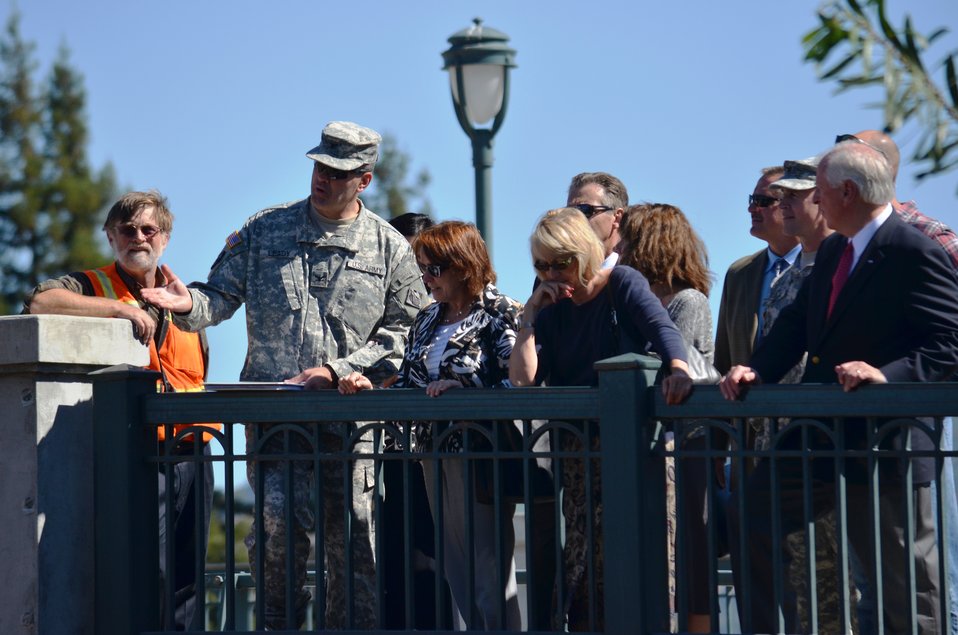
Tour of Napa flood risk reduction efforts

The tour stands upon a recently raised bridge to view construction efforts in the Napa Creek. (US Army Corps of Engineers/DeDe Cordell)